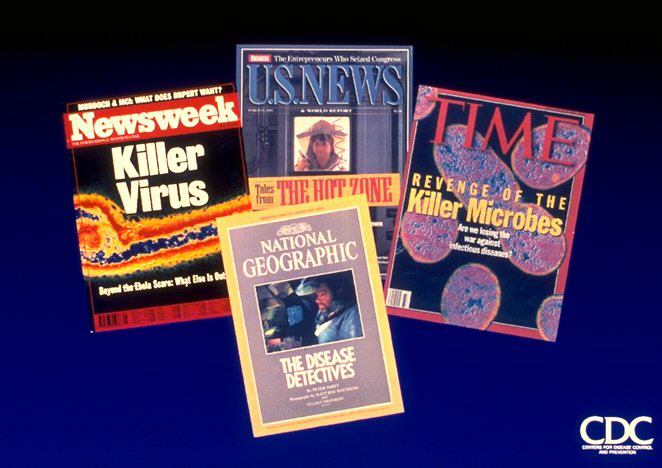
Reporting of Emerging Infectious Disease Threats (photos)